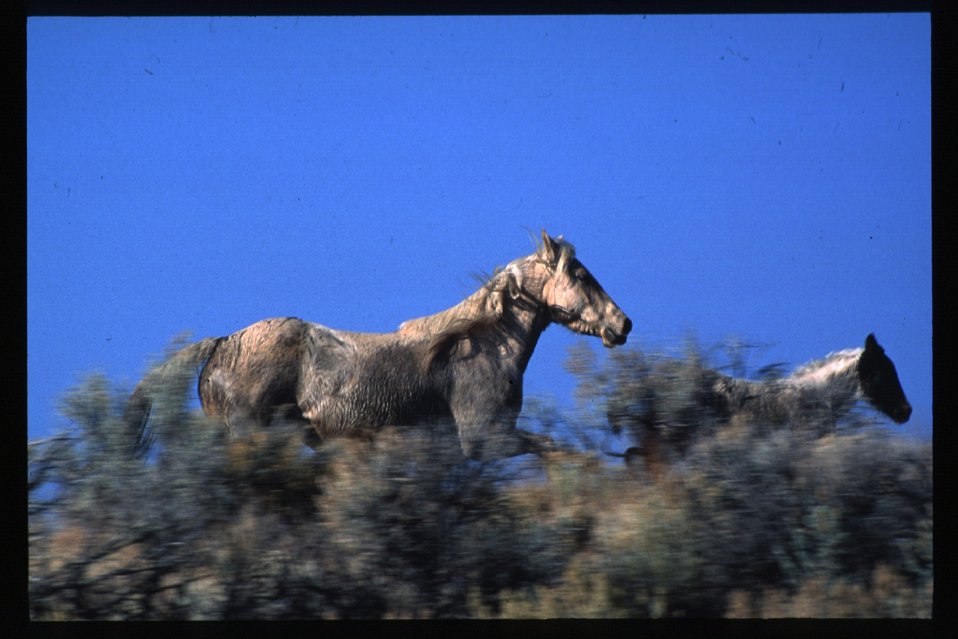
Wild horse and burro Corral roundup WHB LSRD Lower Snake River District